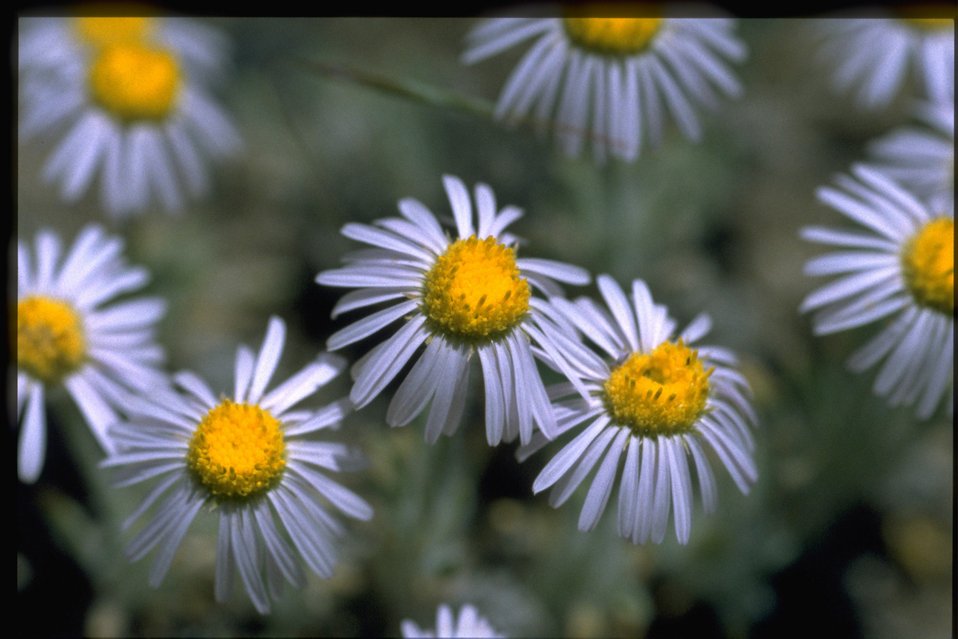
Closeup shot of purple cushion fleabane (Erigeron poliospermus var. poliospermus).